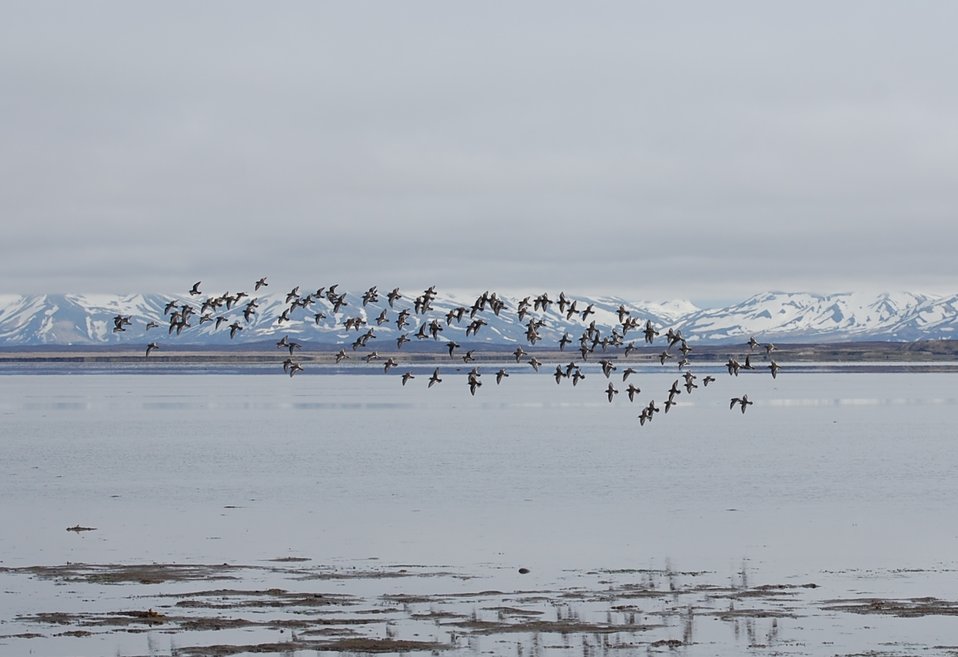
Rock Sandpiper flock

Kinzarof Lagoon, Izembek National Wildlife Refuge
Photo by Kristine Sowl,
USFWS, Public Domain